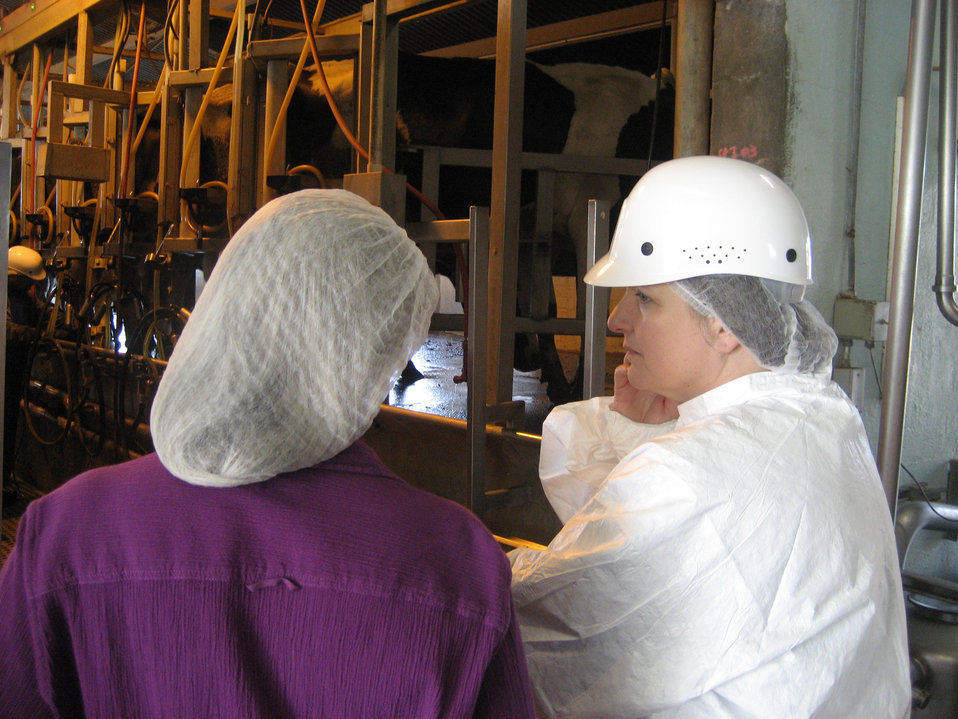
Agriculture Deputy Secretary Dr. Kathleen Merrigan visits the Zimmerman Dairy Farm in Queen Creek, Arizona, on Tuesday, March 27, 2012.